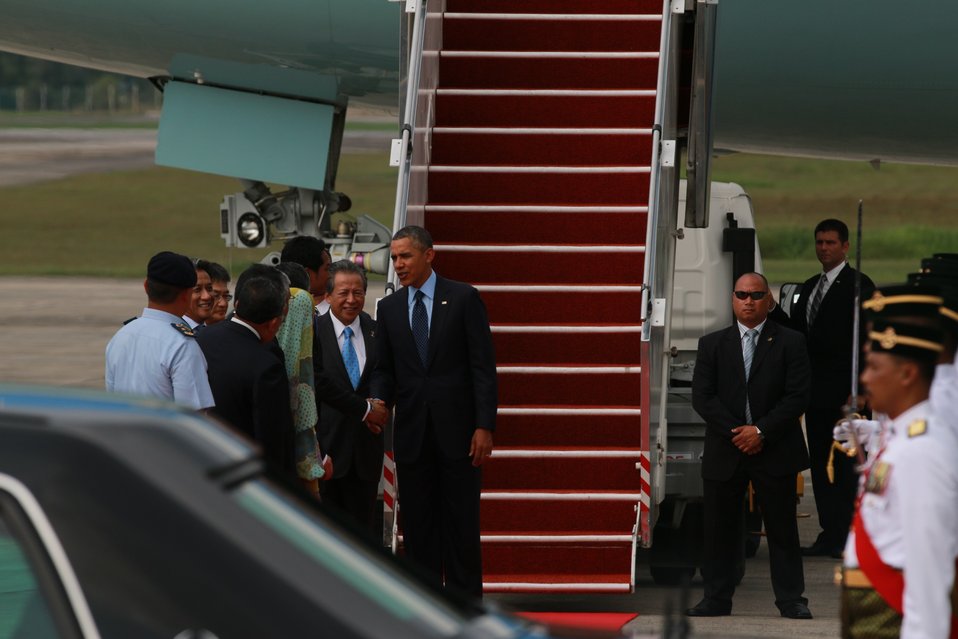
President Obama Arrives in Malaysia

President Barack Obama arrives in Kuala Lumpur, Malaysia on April 26, 2014.